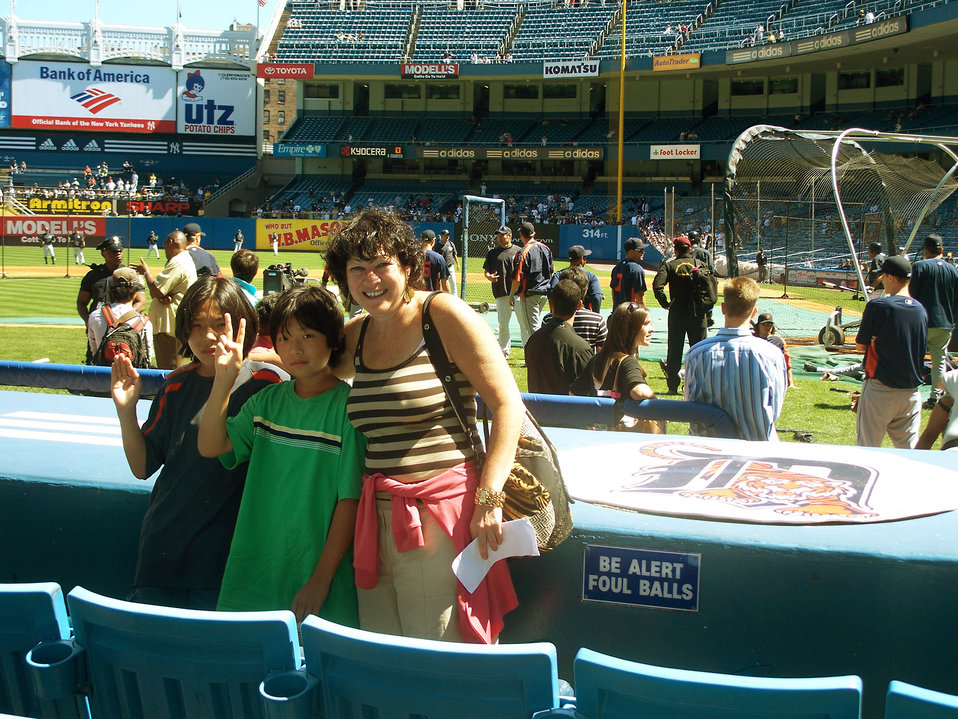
SS at Stadium

Judge Sotomayor with nephews Conner and Corey Sotomayor at Yankee Stadium.